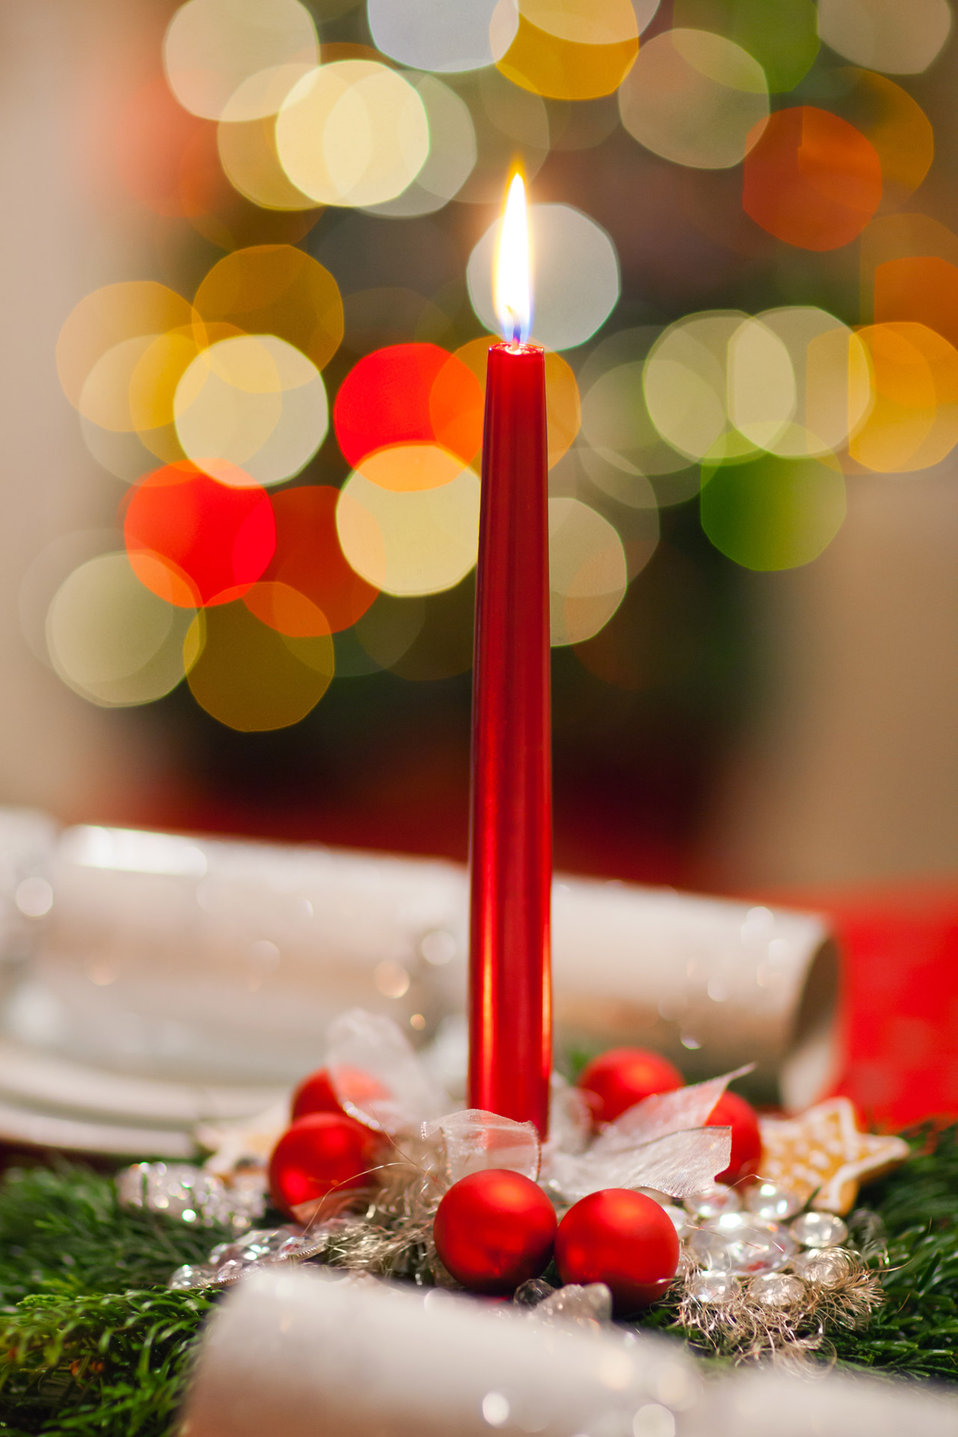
Christmas candle decoration

Christmas candle with decoration and blurred christmas tree in the background.